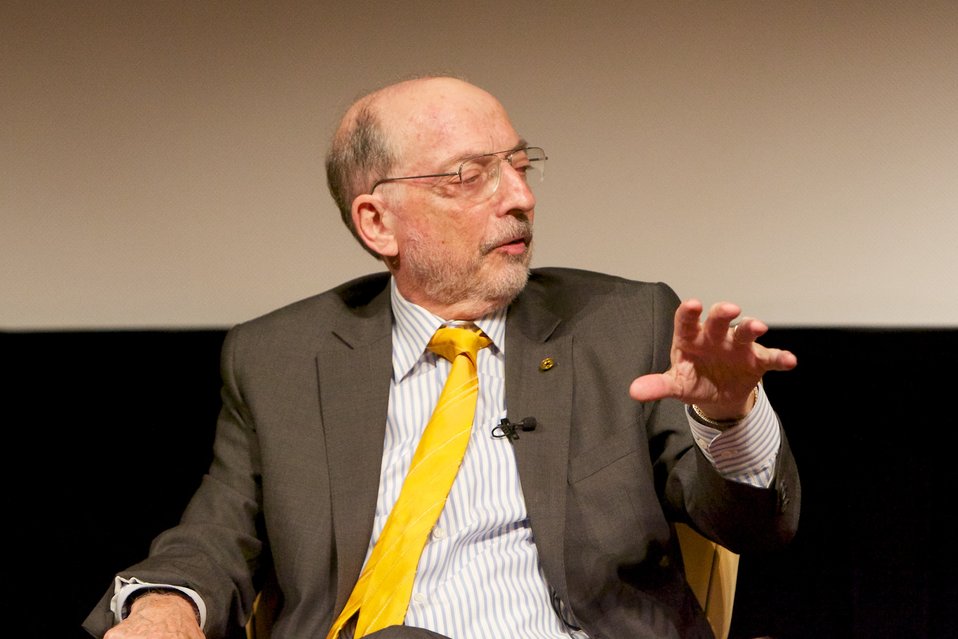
The Gettysburg Story and The Wheatfiled; Gabor S. Borit, Lincoln and Civil War era scholar, discusses and answers questions about the films The Wheatfield and The Gettysburg Story